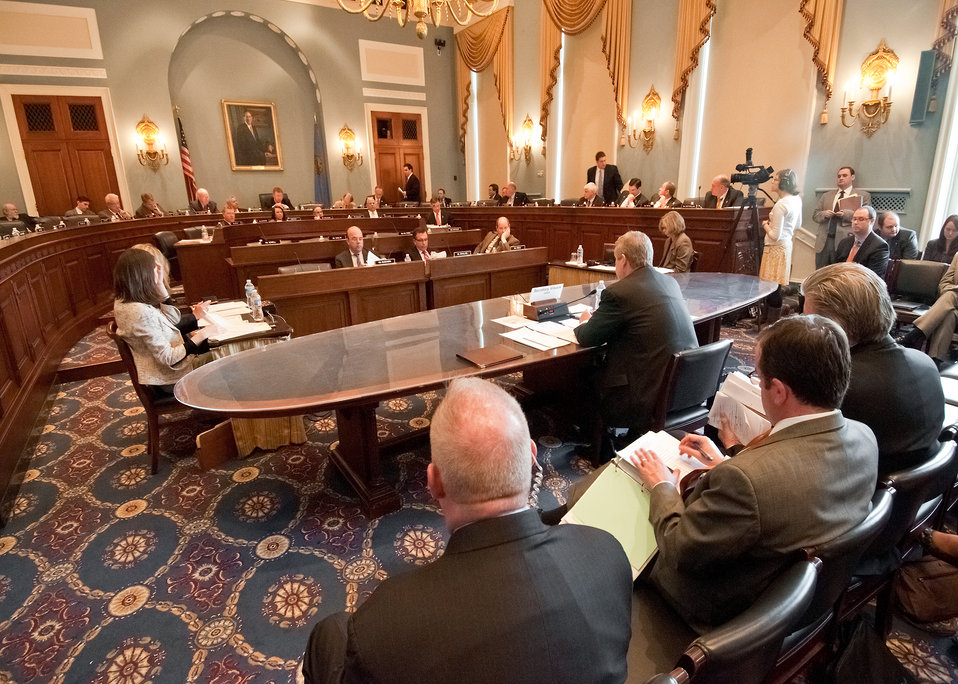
Agriculture Secretary Tom Vilsack testified on the “State of the Ag Economy” at a House Agriculture Committee Hearing in the Longworth House Office Building in Washington, D.C., Thursday, February 17, 2011.